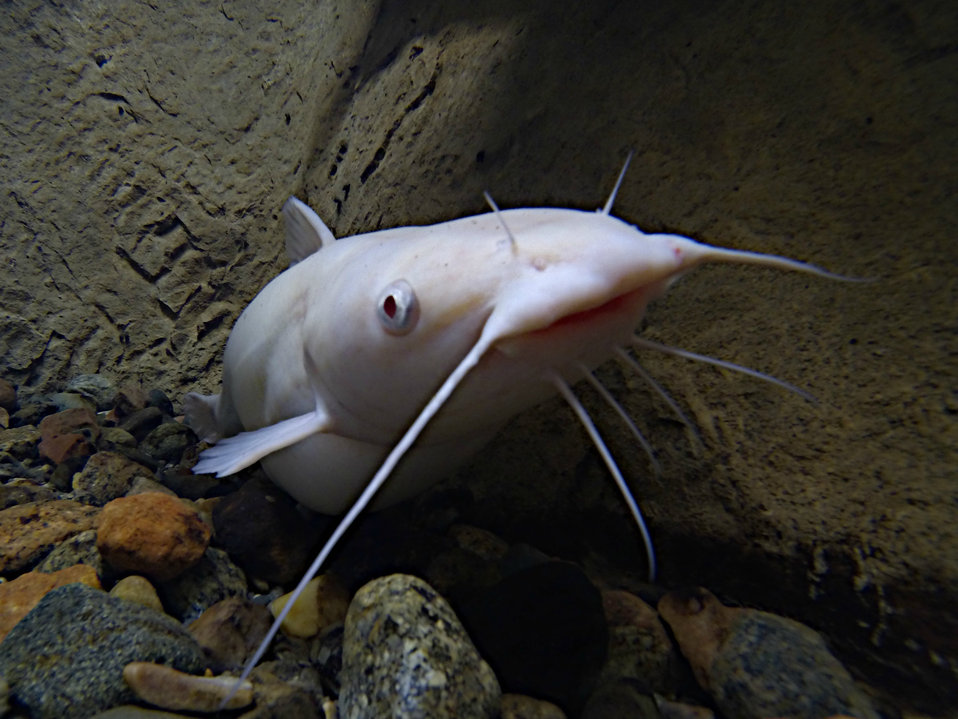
Albino Catfish

Meet 'Oscar,' the albino catfish!

He was caught and donated by a local angler about five years ago. Oscar is our most popular fish at the aquarium, which reopens on April 1.